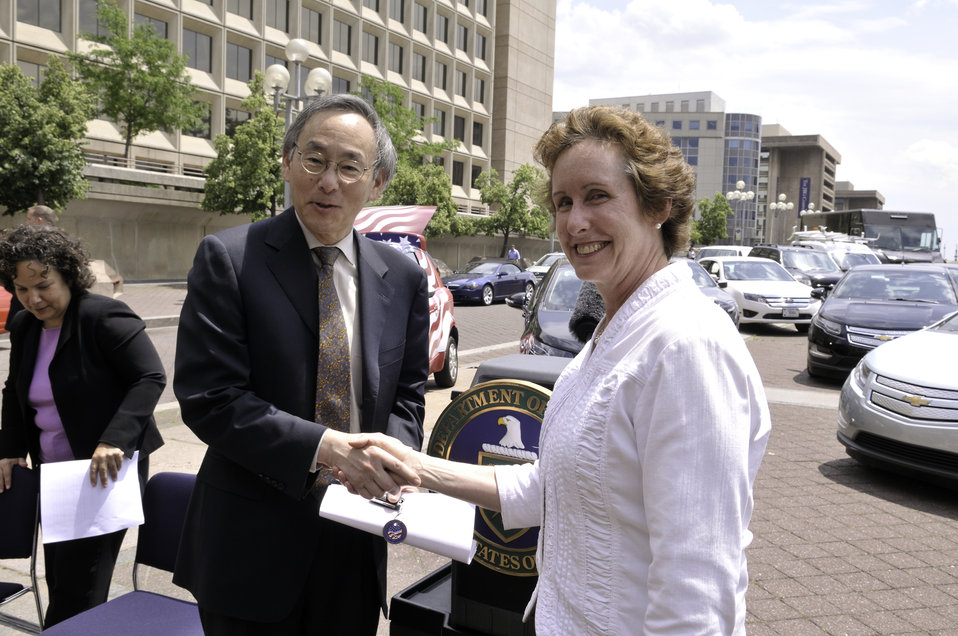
Clean Fleets Announcement 10 of 14

Martha Johnson, General Services Administrator, shakes hands with Sec. Steven Chu, US Department of Energy, after speaking at the clean fleets event.